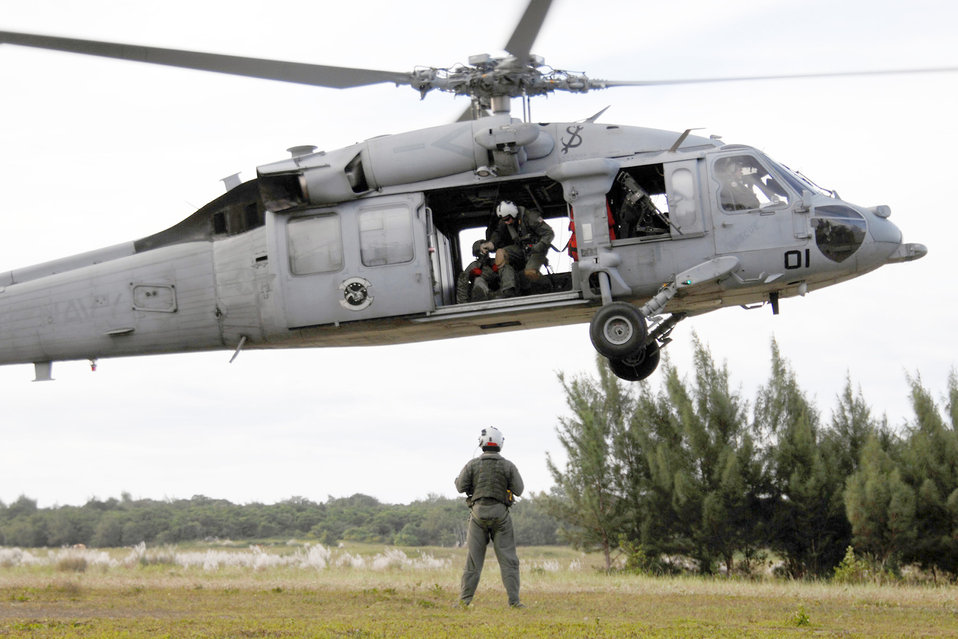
Airmen, Sailors train together for future relief efforts

Servicemembers assigned to the 36th Mobility Response Squadron and HSC-25 conduct medical evacuation training Oct. 13, 2010, at Northwest Field, Guam. The joint field training exercise was performed in an effort to interchange and familiarize themselves with each other's tactics, techniques and procedures to be able to interoperate and conduct joint humanitarian assistance/disaster relief missions in the Pacific region.